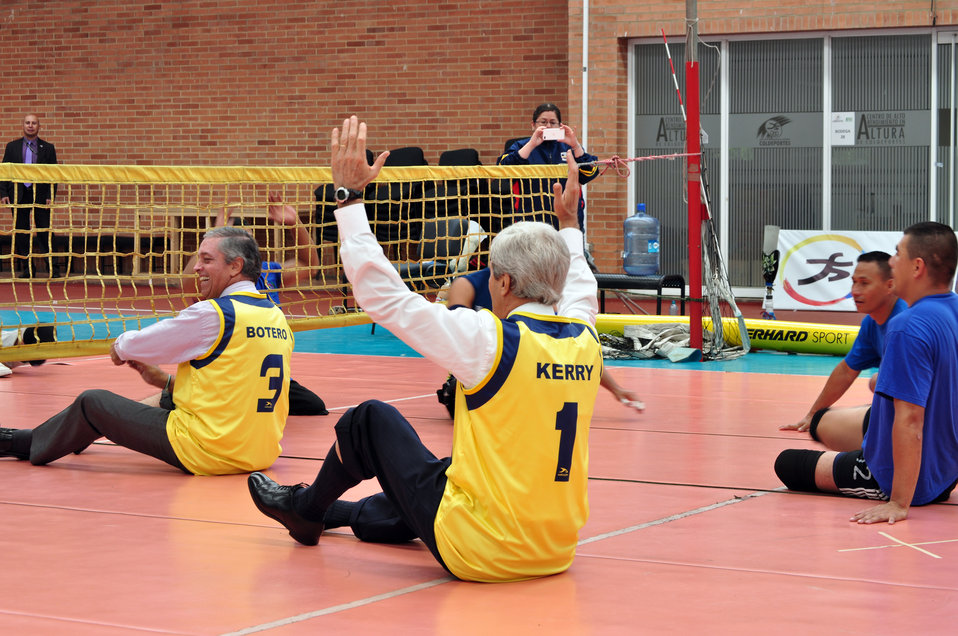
Secretary Kerry Celebrates a Point

U.S. Secretary of State John Kerry celebrates a point while participating in a seated volleyball game with wounded veterans during a visit to the Coldeportes Center in Bogota, Colombia, on August 12, 2013.